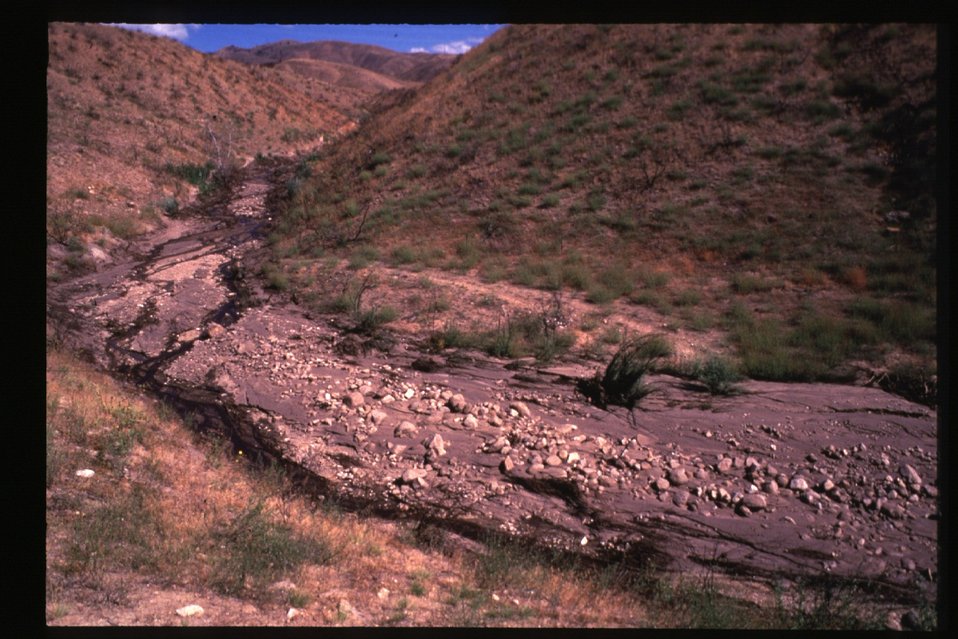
Fire 8th Street Fire Flood Water erosion Four Rivers Field Office LSRD Lower Snake River District